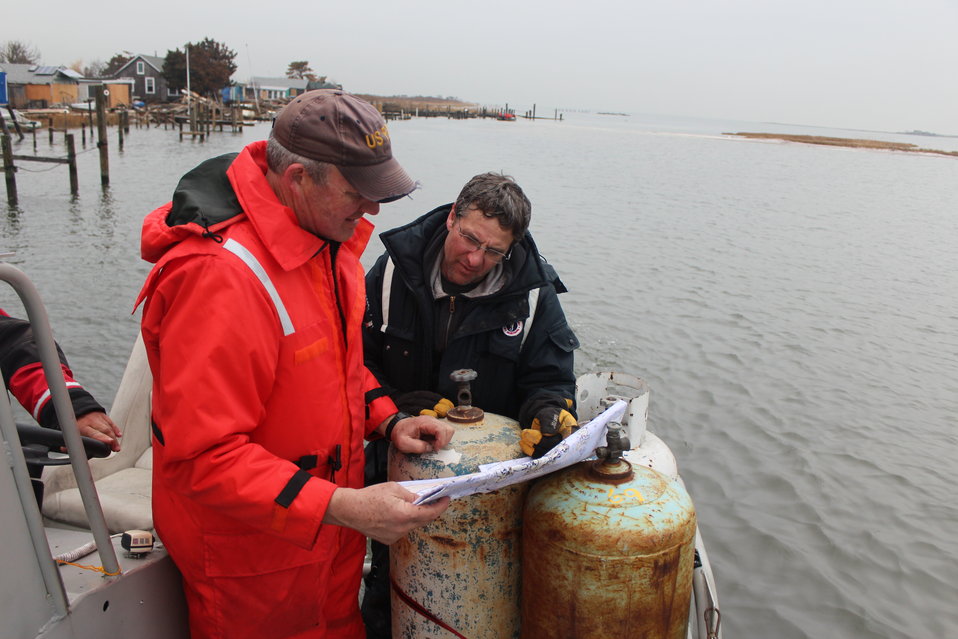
December 8, 2012 Where to next?

While most of the plan is determined at the start of the day, inevitably more containers were found and some areas required a second trip. Other new discoveries required even more time to remove (see following photos). EPA On-Scene Coordinators Nalipinski and Lipson re-evaluate what to tackle with the remaining daylight.